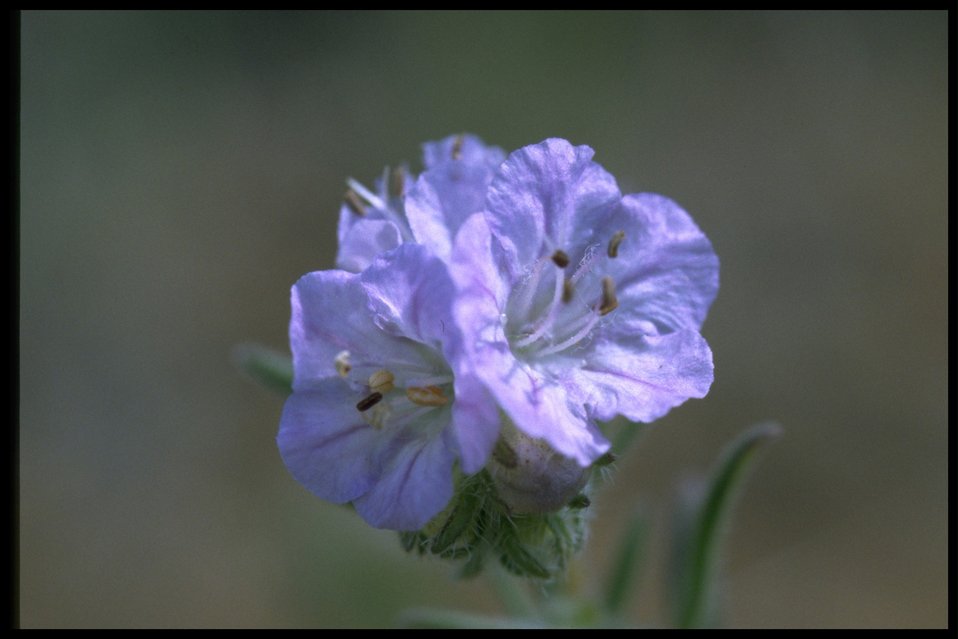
Closeup shot of Linear-leaf Phacelia wildflower.